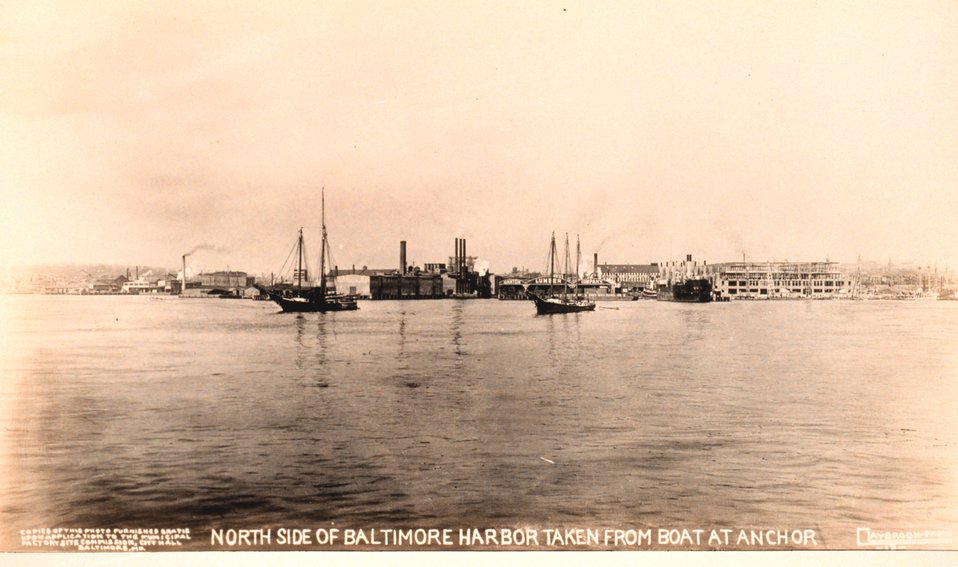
The North side of Baltimore Harbor as seen from a boat at anchor. Accompanied as loose photos in the 'Monthly Journal of the Engineers' Club of Baltimore' for February 1914.